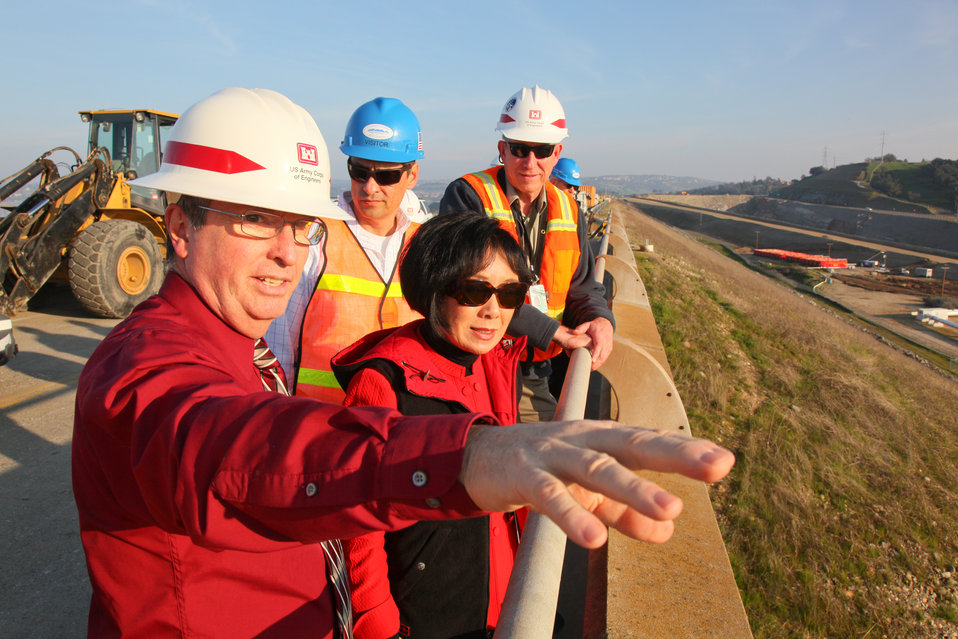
Corps provides tour of Folsom Dam Joint Federal Project to Congresswoman Matsui

FOLSOM, Calif. (Feb. 4, 2011) – U.S. Army Corps of Engineers Sacramento District project management team member Roger Henderson (left) points out ongoing construction from atop of the Folsom Dam to U.S. Rep. Doris O. Matsui here Feb. 3. The congresswoman witnessed firsthand ongoing construction of the new auxiliary spillway at the dam, part of the Folsom Dam Joint Federal Project, and received a briefing on the status of the project by personnel from both the Sacramento District and Bureau of Reclamation.